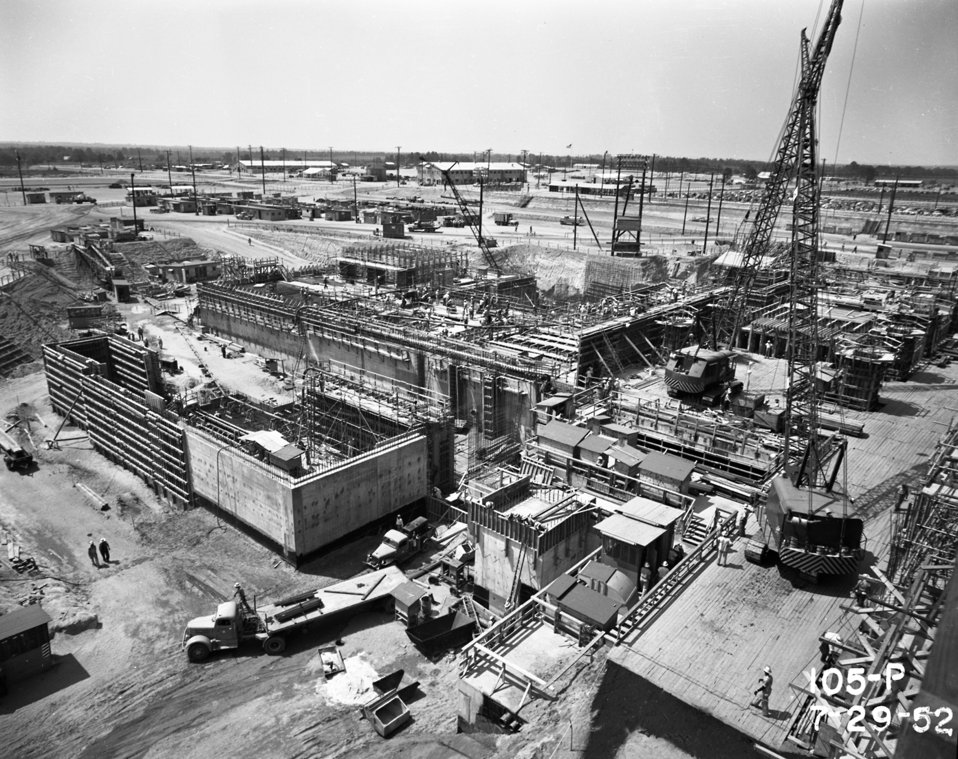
Historic P and R Reactor Photos - Savannah River Site

These photos from the 1950s show the construction of Savannah River Site’s P and R Reactors, as well as activities at the reactors once they became operational that decade. Each of the reactors, which formerly produced nuclear materials, occupies more than 300,000 square feet of space.